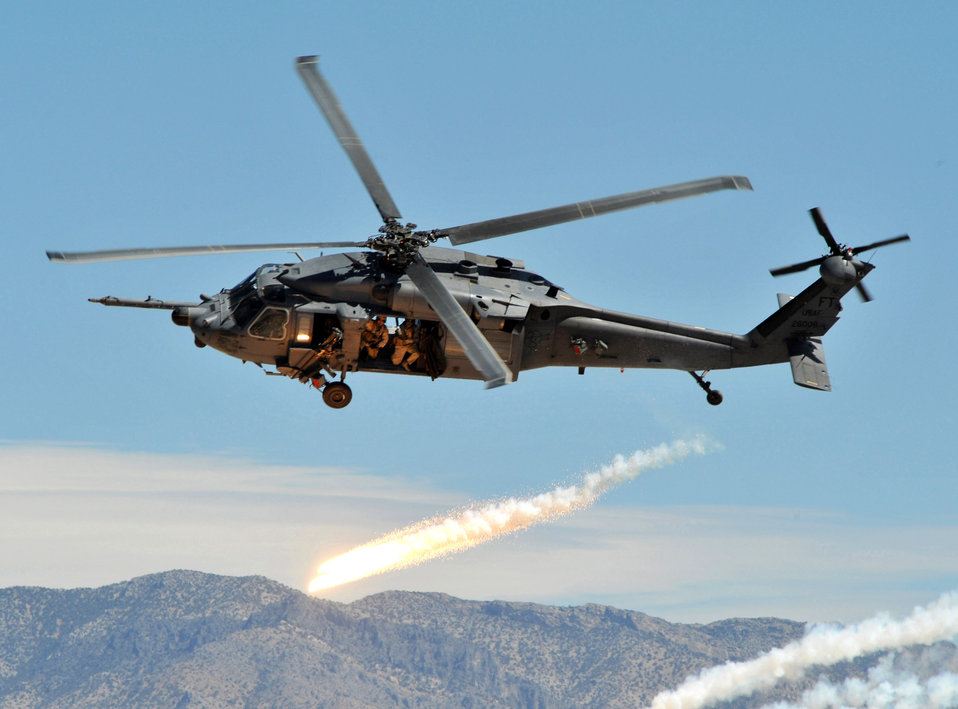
Show of force

An HH-60 Pave Hawk assigned to Nellis Air Force Base, Nev., fires off chaff-flares while demonstrating evasive maneuvers during the firepower demonstration Sept. 14 at Nevada Test and Training Range. The demonstration gave the general public a close-up and realistic view into the Air Force's ability to perform its wartime mission.